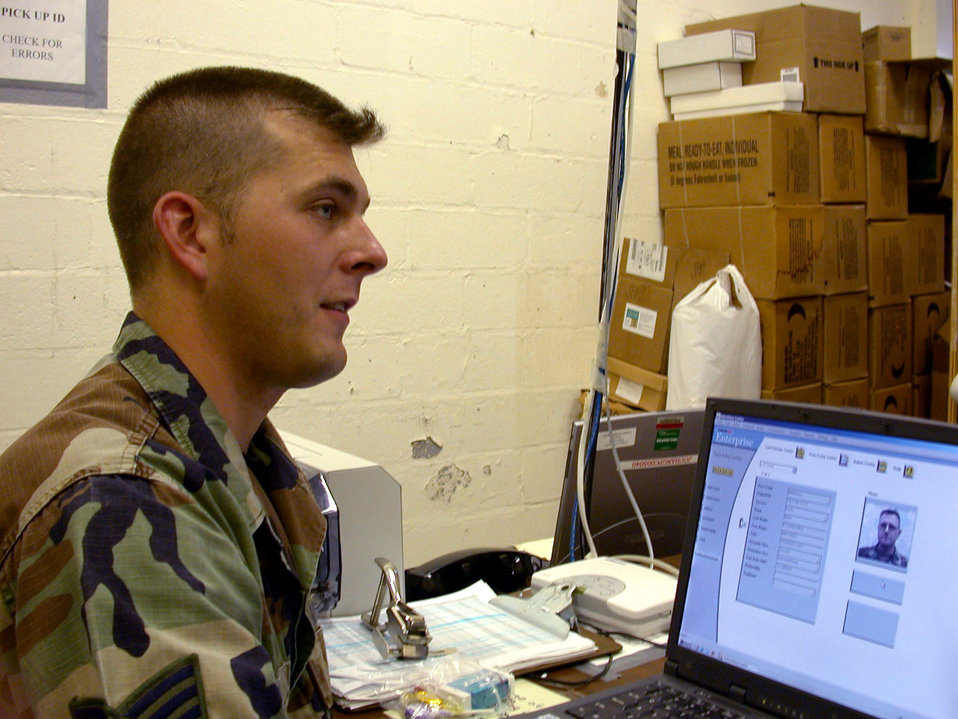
Cook

U.S. NAVAL BASE GUANTANAMO BAY, Cuba -- Staff Sgt. Todd Cook is one of a handful of airmen supporting Joint Task Force-Guantanamo. He is responsible for in-processing all new task force people. Cook is deployed from Wright-Patterson Air Force Base, Ohio.